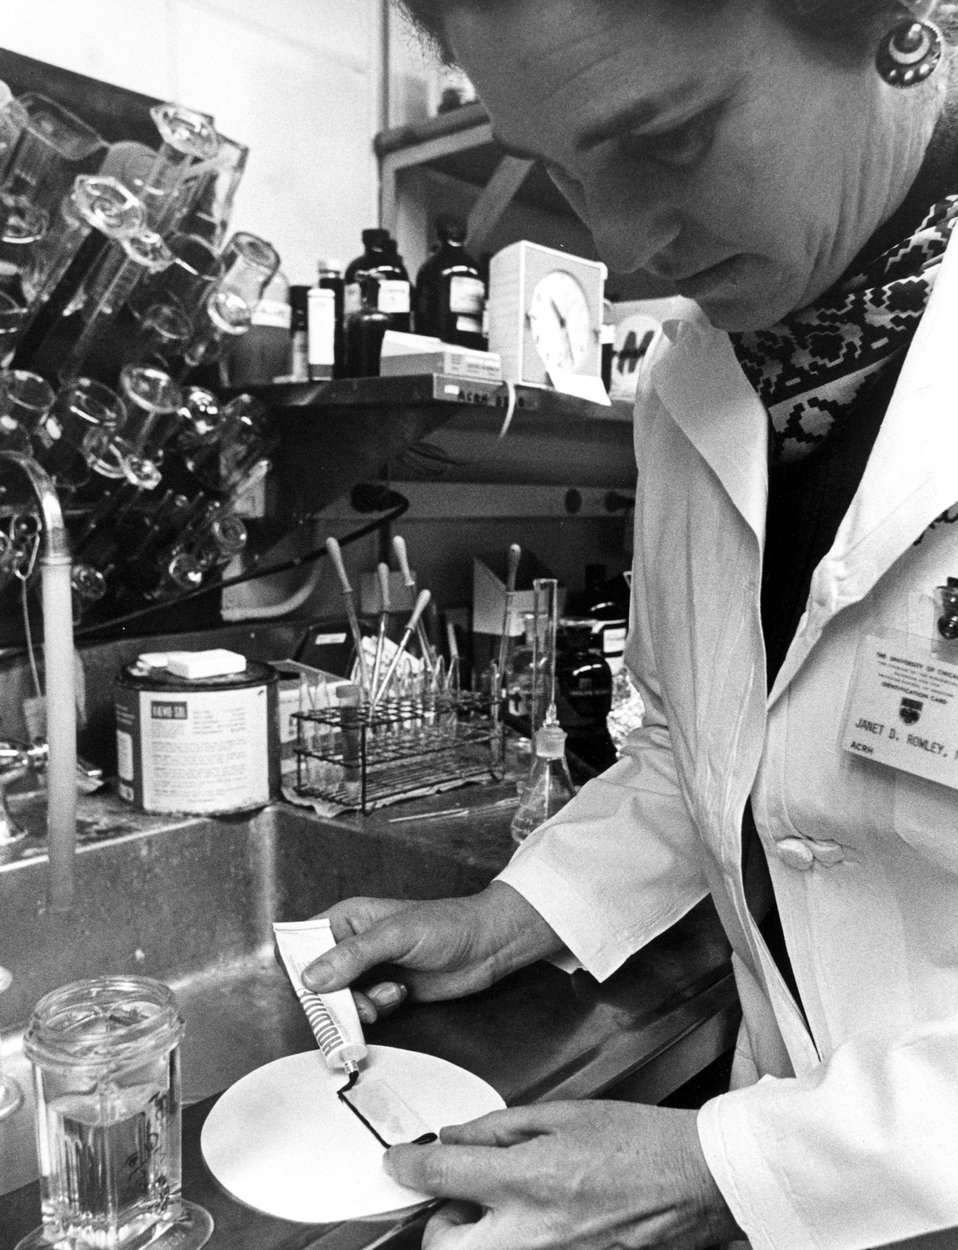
The cytogenetics of human leukemia's are being studied at the University of Chicago with the aid of new techniques which permit identification of each pair of chromosomes.